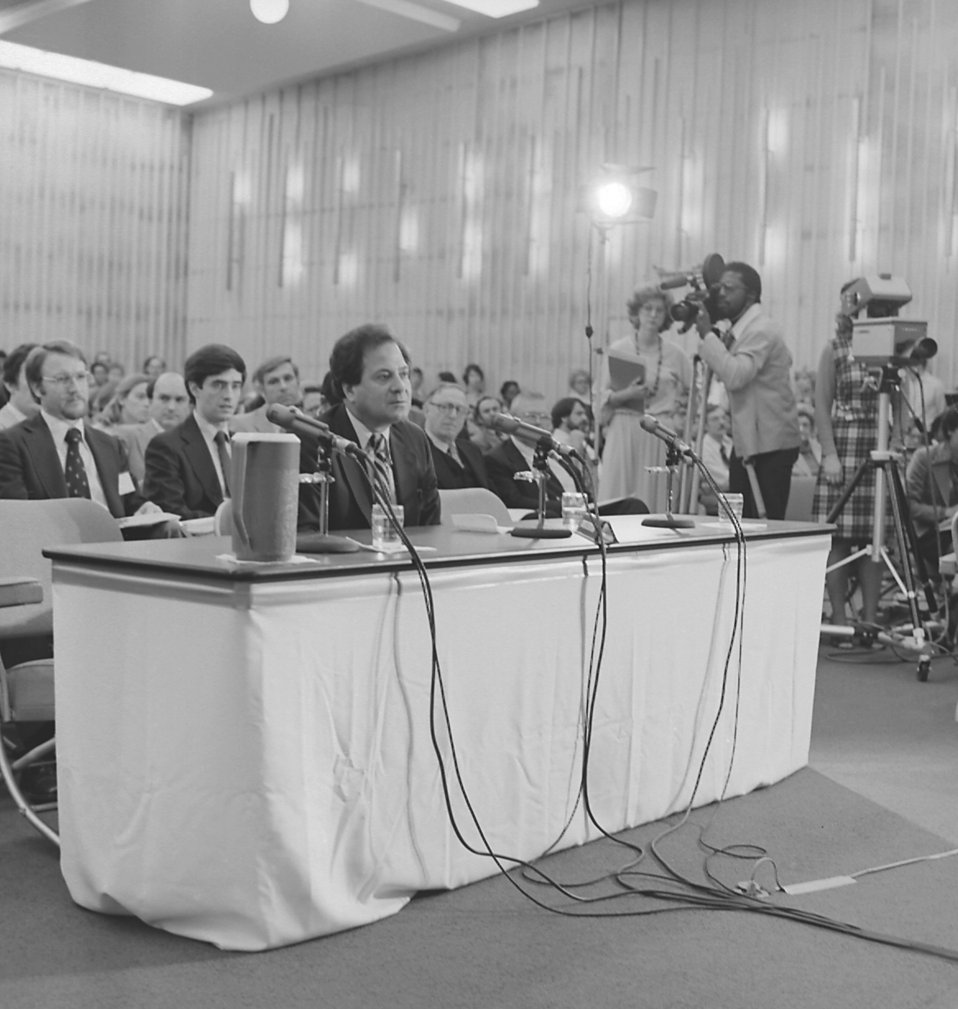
Legionnaires' Disease senate hearing during the outbreak of the 1970s.